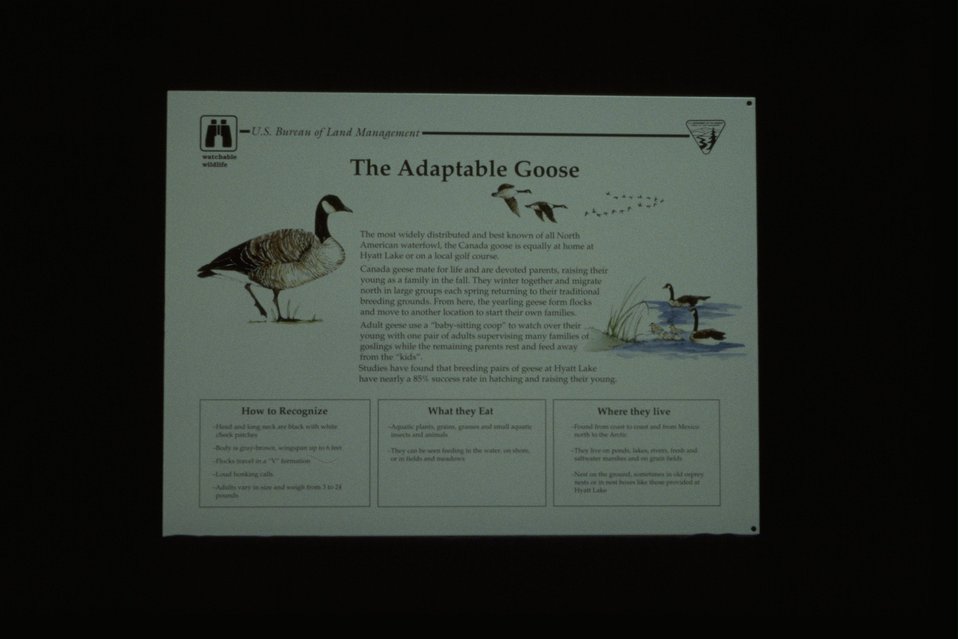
Watchable Wildlife panel from Hyatt Lake.